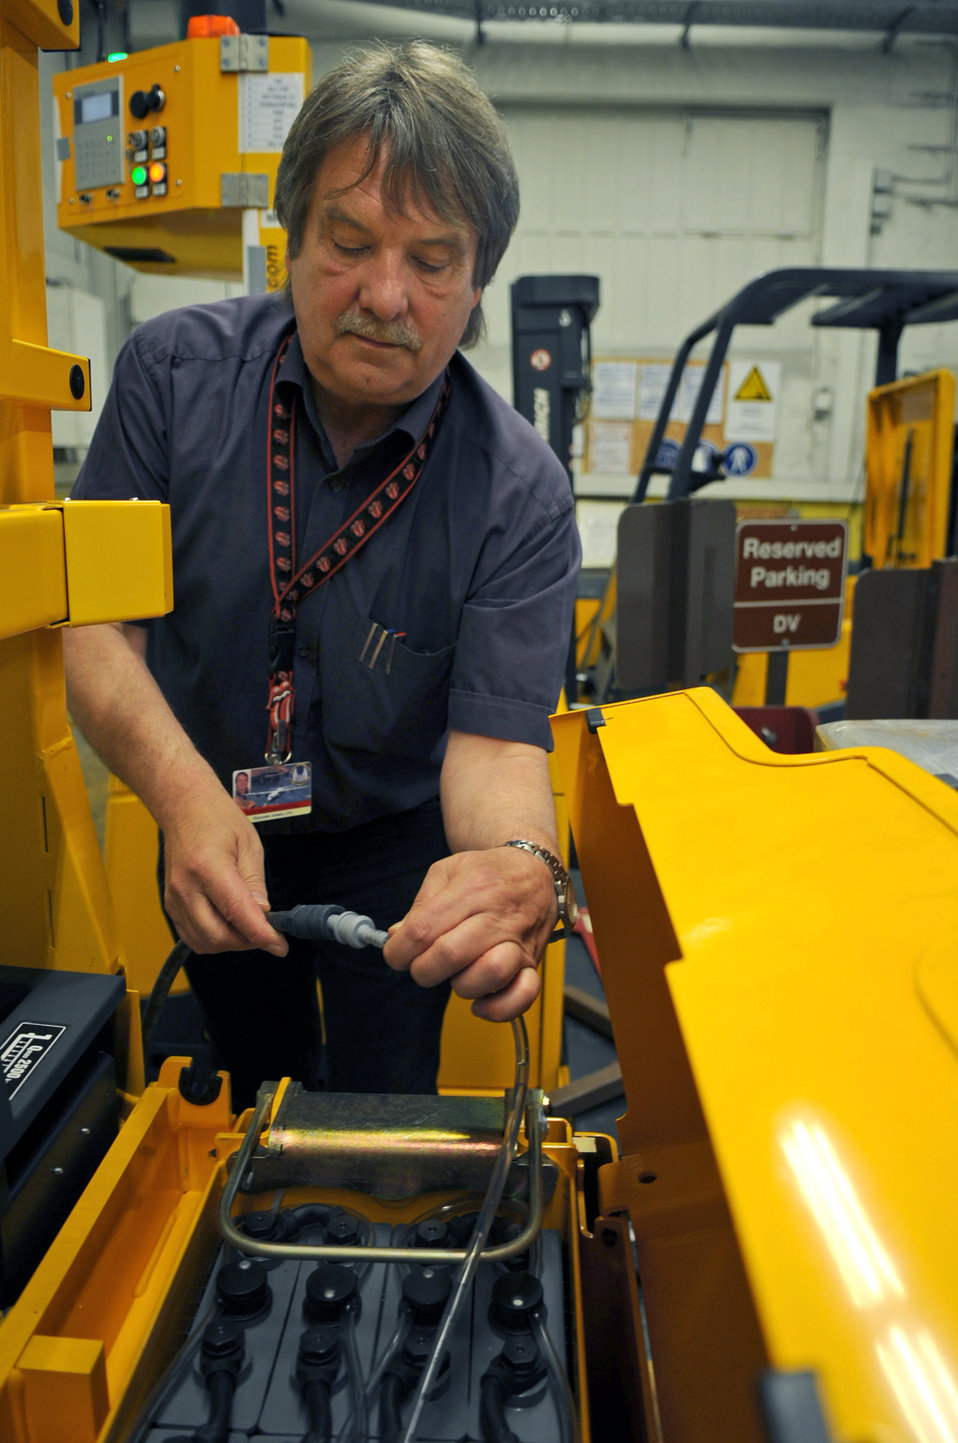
AGV

Eduard Junko connects a water hose to an automated guided vehicle during a showcase of the new equipment June 17, 2010, at Ramstein Air Base, Germany. Members of the 86th LRS material management flight are the first to use these AGVs in the United States Air Forces in Europe Command. Mr. Junko is the material management flight chief of operations.